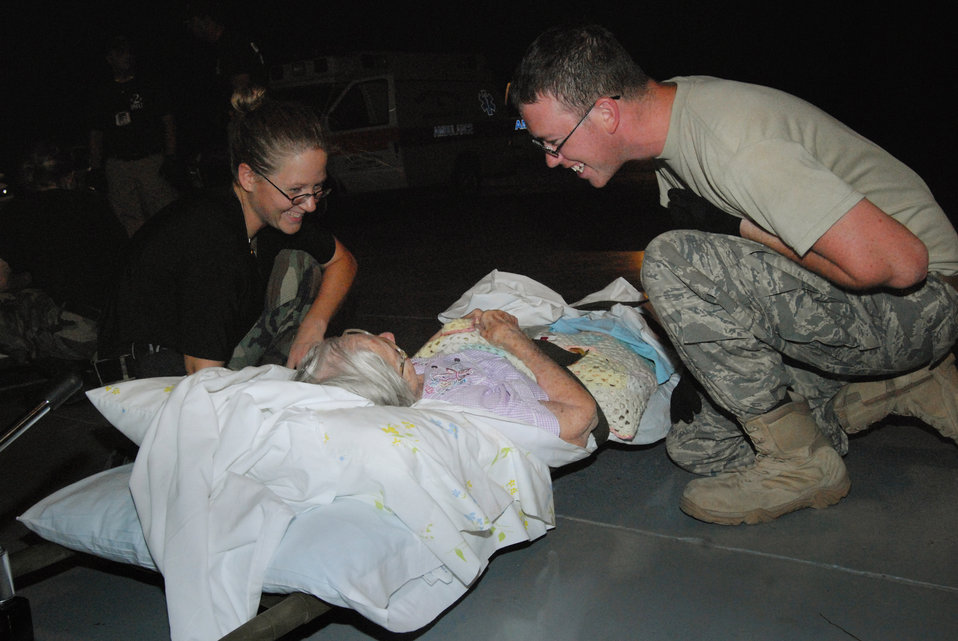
Hurricane Gustav

Tech. Sgt. Krystal Marks, 43rd Aerospace Medicine Squadron and Senior Airman Payden Forkum, 43rd Medical Operations Squadron, provide care to an elderly woman at the Lakefront Airport in Louisiana August 31.